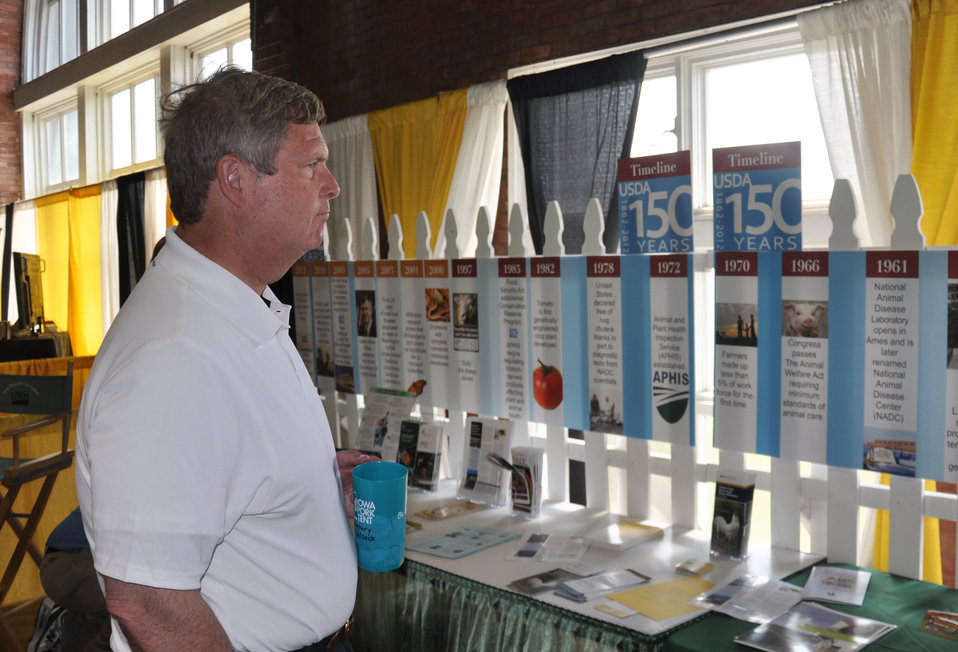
Agriculture Secretary Tom Vilsack looks over the USDA's 150th Anniversary display during his tour of the Iowa State Fair in Des Moines, Iowa, on Thursday, August 16, 2012.

The Secretary was in Iowa As part of continuing steps by the Obama Administration to assist livestock producers in response to the historic drought. USDA will utilize nearly $16 million in financial and technical assistance to immediately help crop and livestock producers in 19 states to cope with the adverse impacts of the historic drought. In addition, USDA will initiate a transfer of $14 million in unobligated program funds into the Emergency Conservation Program. These funds can be used to assist in moving water to livestock in need, providing emergency forage for livestock, and rehabilitating lands severely impacted by the drought. Together these efforts should provide nearly $30 million to producers struggling with drought conditions.Most recently, Secretary Vilsack signed disaster designations for an additional 44 counties in 12 states including Iowa as primary natural disaster areas due to damage and losses caused by drought and excessive heat.